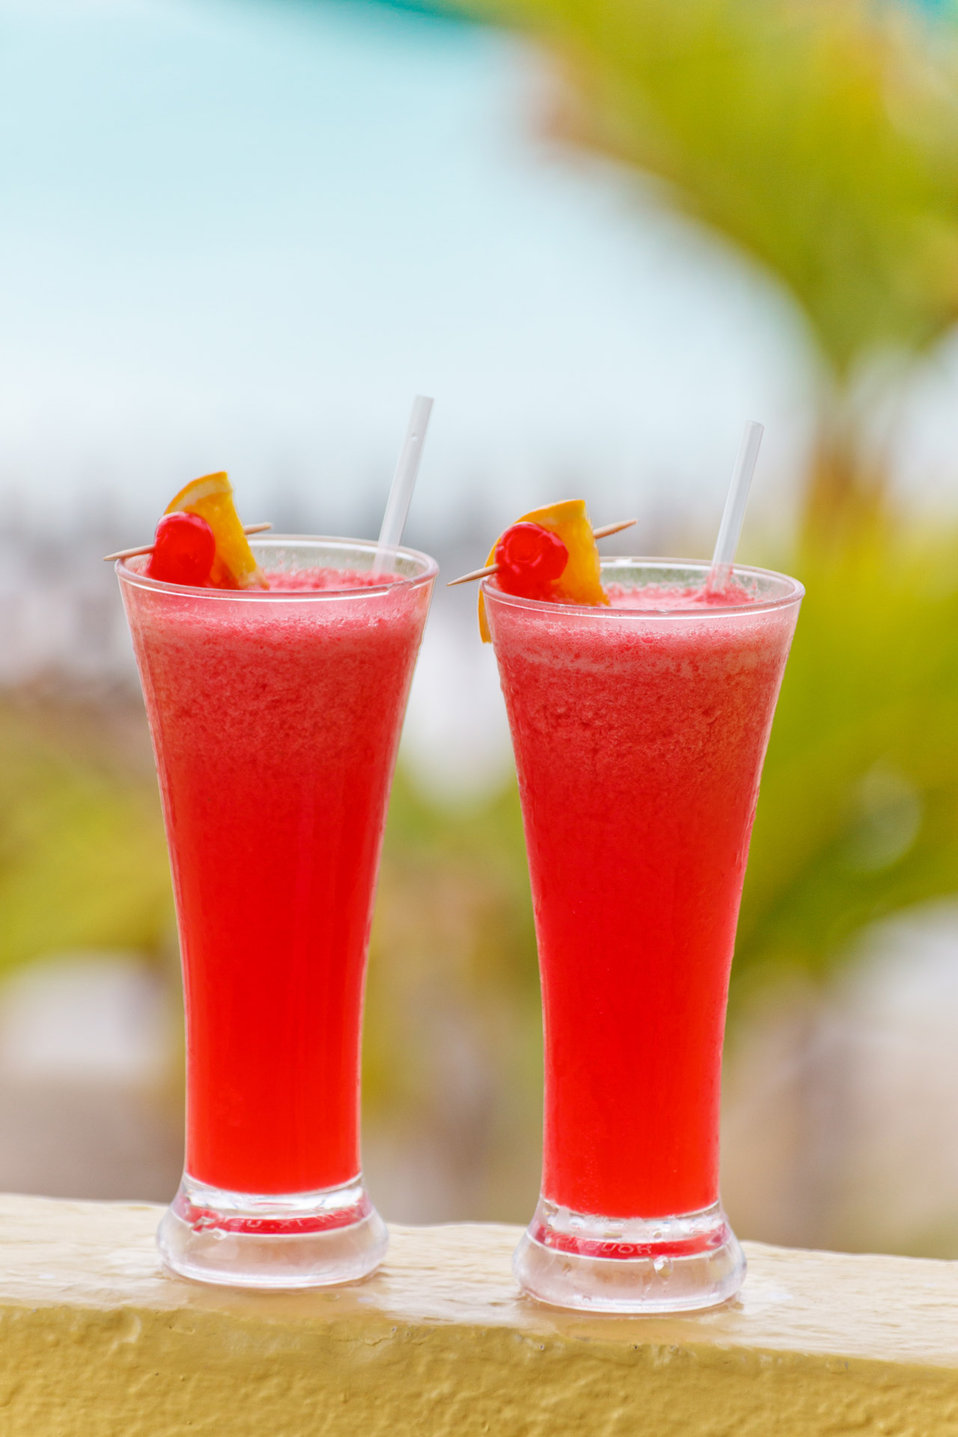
Fruit punch

Two glasses of ice cold fruit punch.